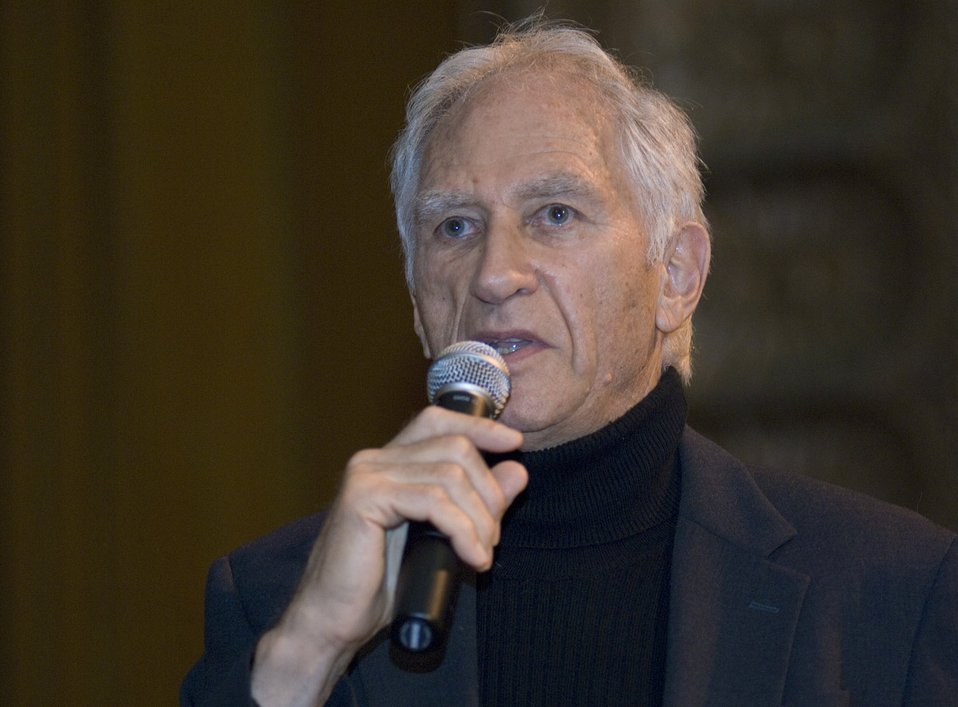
Presentation of 'Fighting for Life' documentary

Director Terry Sanders, a two-time Academy Award winner, speaks to nearly 300 Air Force Airmen and city civic leaders before the premiere showing of his film 'Fighting for Life' during Air Force Week - Philadelphia May 28. The film is a feature documentary telling the stories of doctors and nurses fighting on the front lines of battle to save lives. The Air Force Week program is part of a proactive initiative to increase communication with the public. Air Force Week includes community visits and talks by Air Force officials, flight demonstration team performances and displays highlighting the Air Force men and women serving on the front lines.